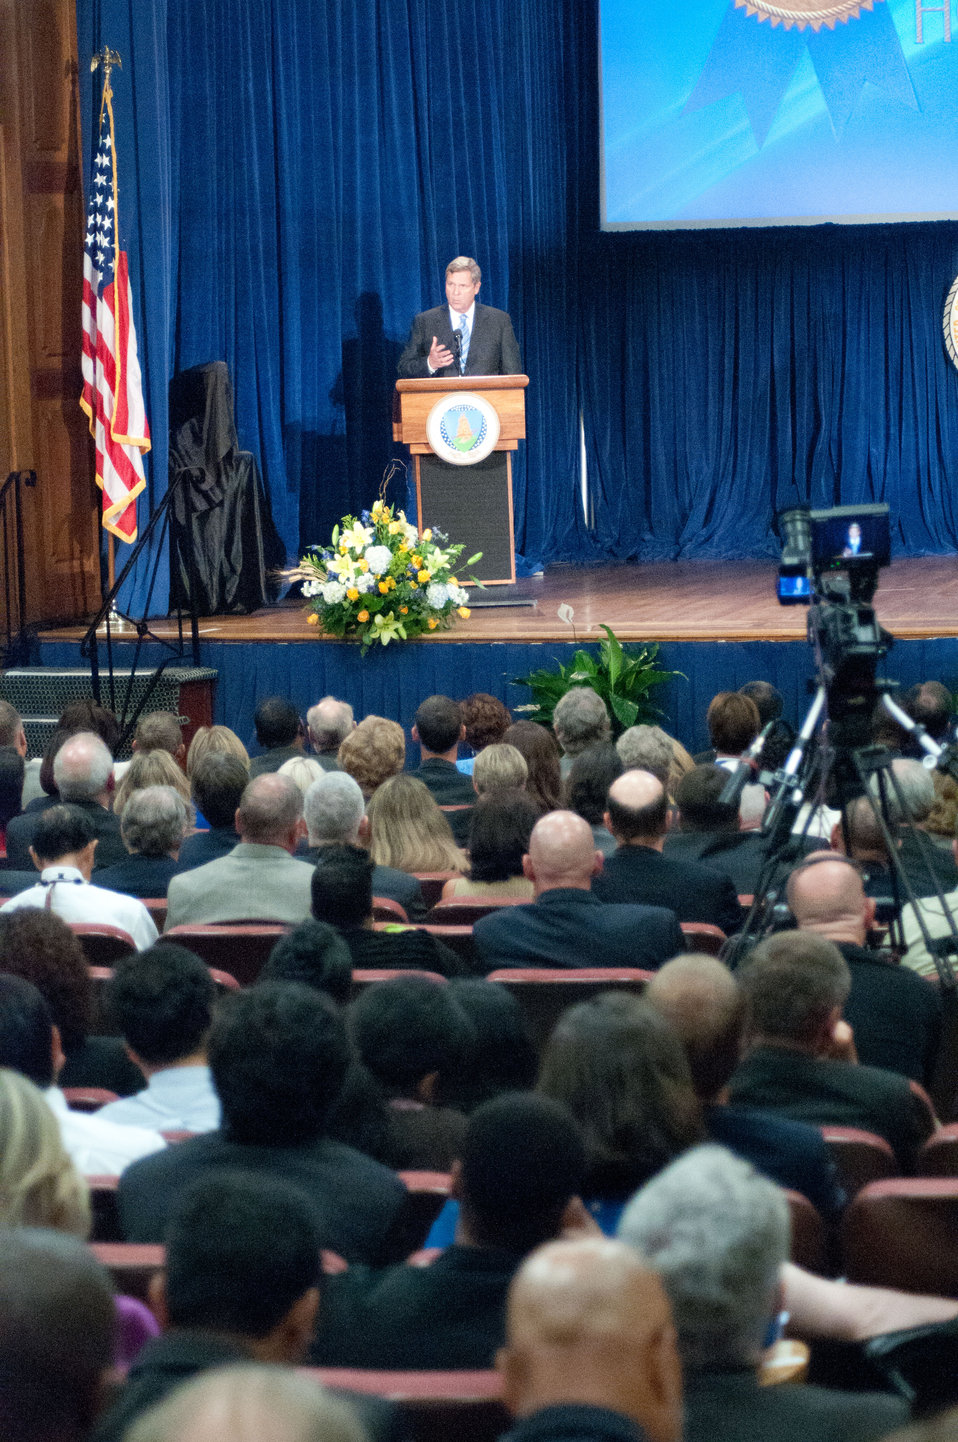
Agriculture Secretary Tom Vilsack makes remarks during the United States Department of Agriculture 63rd Secretary’s Annual Honor Awards ceremony held in the Thomas Jefferson Auditorium in Washington, D.C. on Wednesday, September 14, 2011.